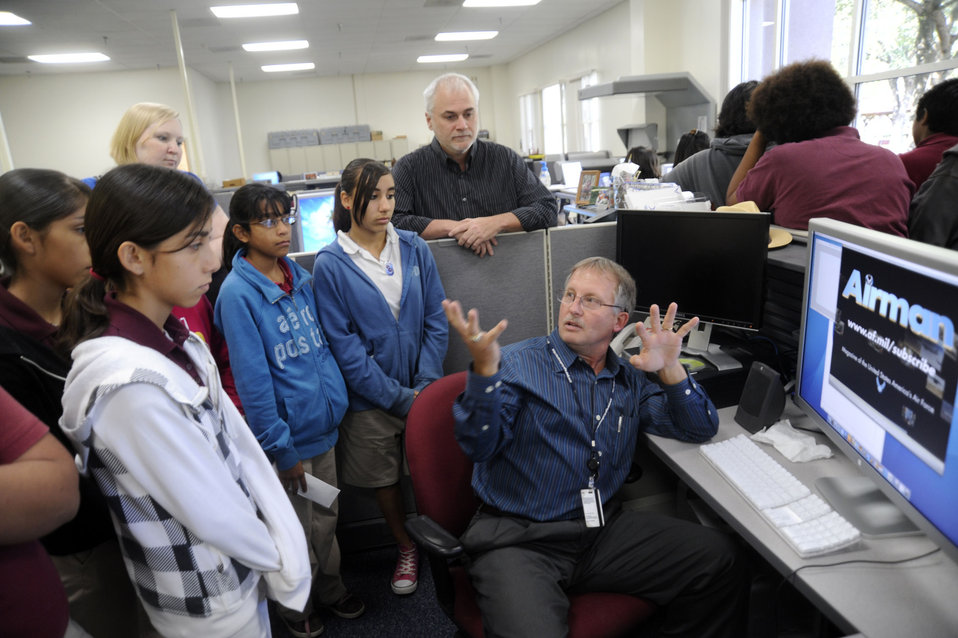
Middle school students tour Defense Media Activity-San Antonio

Billy Smallwood describes the design process for Airman magazine to students during a tour, Nov. 6, 2009, at the Defense Media Activity-San Antonio. Mr. Smallwood is a visual information specialist for DMA-SA and the students are from nearby Rhodes Middle School.